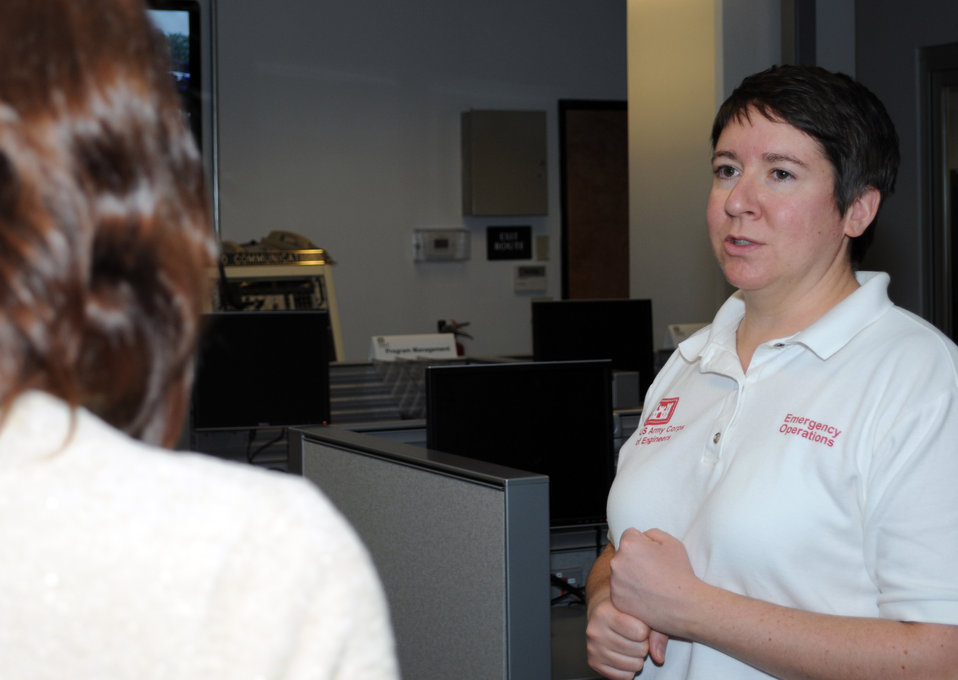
SACRAMENTO, Calif. – Paige Caldwell (right), readiness section chief for the U.S. Army Corps of Engineers Sacramento District, speaks to an attendee during an open house event for the district’s new emergency operations center here Jan. 26. Caldwell highlighted some of the new features of the EOC, including 14 workstations for the various district sections and the commander; a conference room with video teleconferencing capabilities and six television sets monitoring weather, flood, hurricane, fire and earthquake websites, and news stations. The new EOC was designed to support the district’s around-the-clock response to disasters.